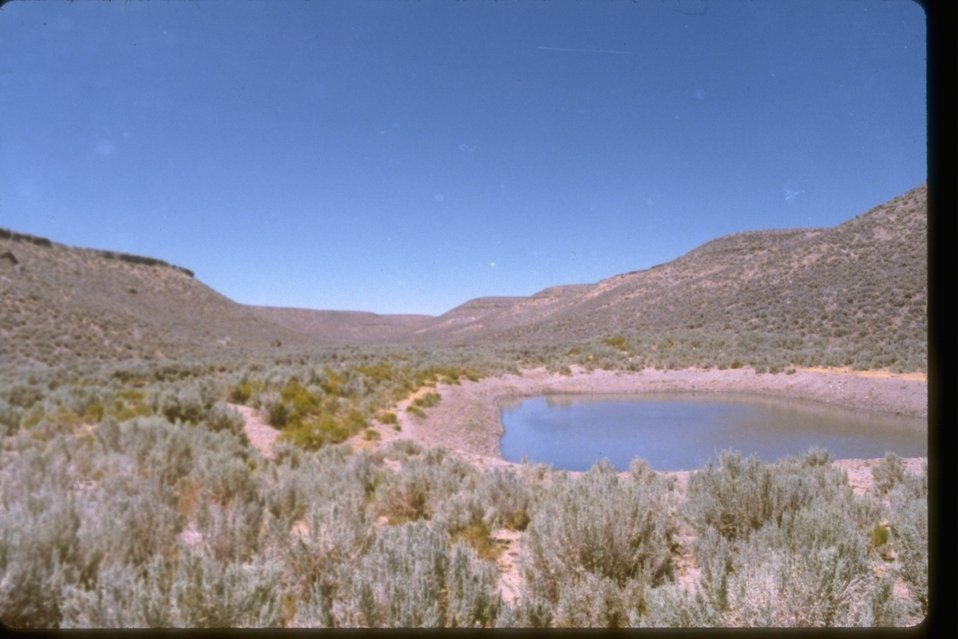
Shingle Reservoir in Orejana Wilderness Study Area. OR 1-78